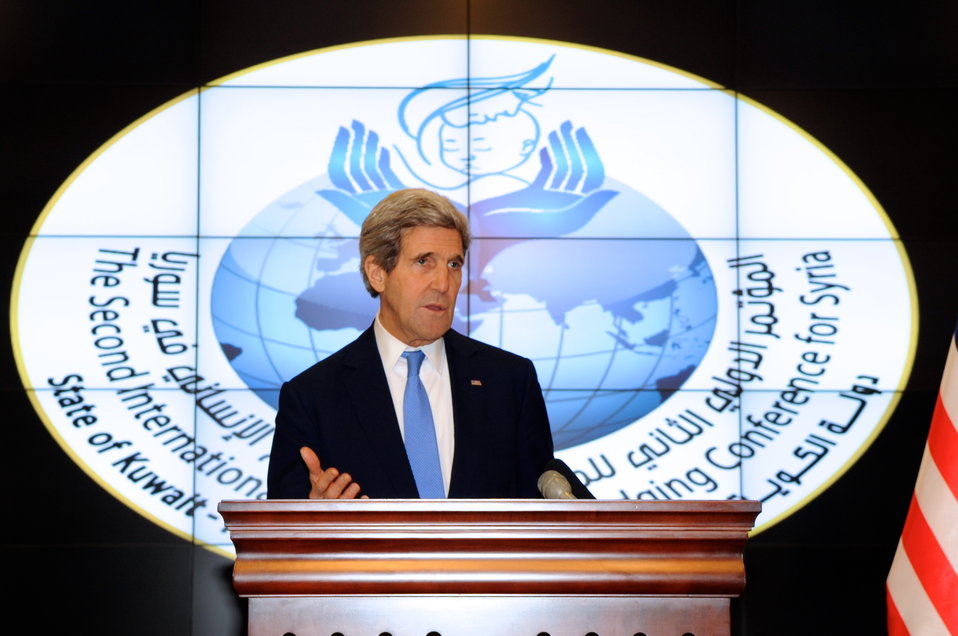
Secretary Kerry Discusses Syrian Aid Situation at End of Donors' Conference

U.S. Secretary of State John Kerry discusses a $380 million pledge the United States made at the Syria Donors' Conference during a news conference with his traveling press corps in Kuwait City, Kuwait, on January 15, 2014.